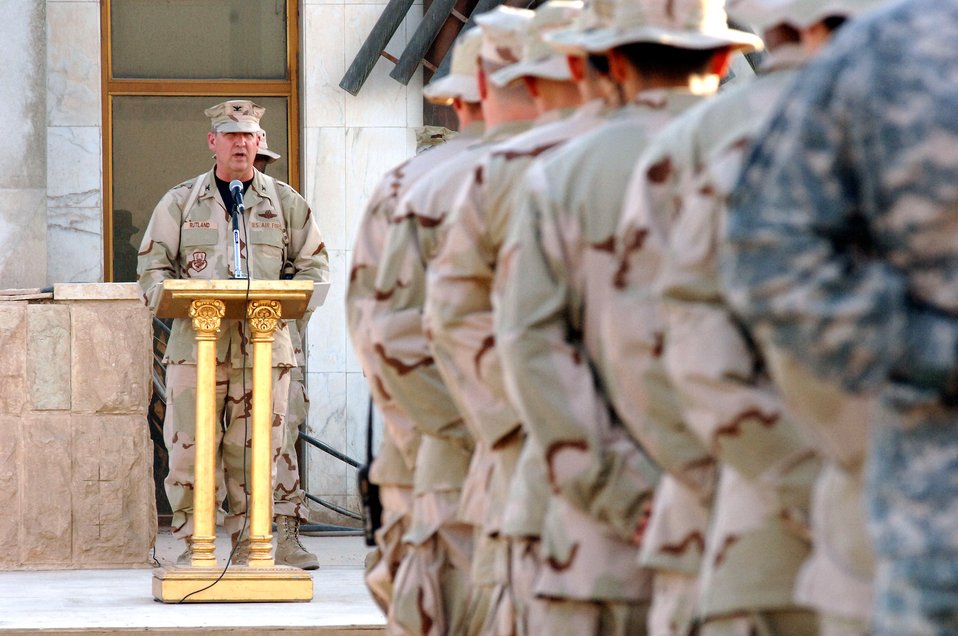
Memorial salute

Col. Ron Rutland addresses Airmen and Soldiers at a Memorial Day retreat ceremony at Sather Air Base, Iraq, on Monday, May 29, 2006. The colonel, deployed from Dover Air Force Base, Del., is the 447th Air Expeditionary Group commander. The 447th AEG operates the primary aerial port for transient military aircraft entering and exiting Iraq. The base is named in honor of Staff Sgt. Scott Sather, a Clio, Mich., native who was killed in combat in Iraq on April 8, 2003.